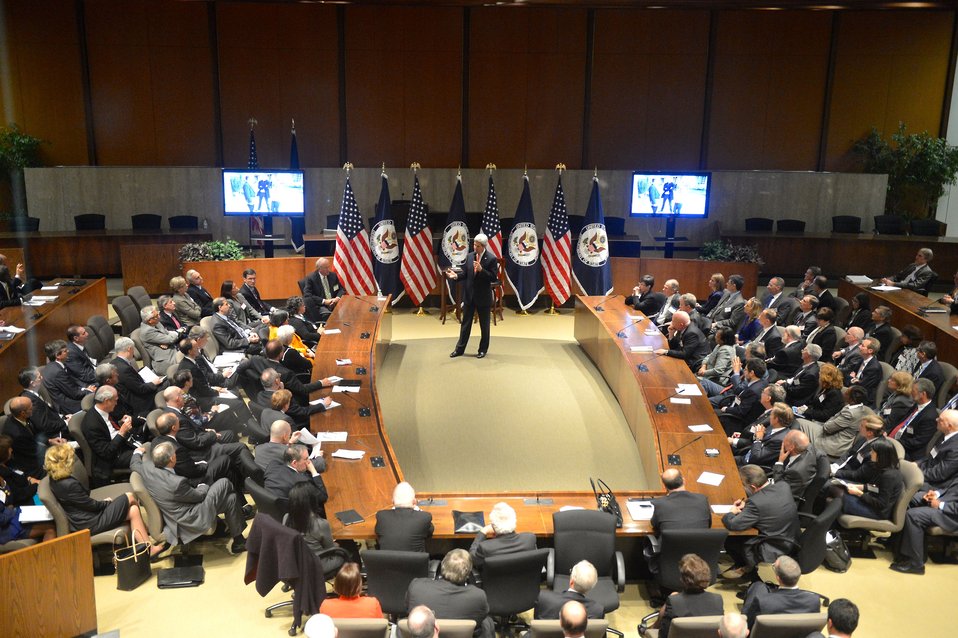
Secretary Kerry Holds a Conversation With America's Top Diplomats

U.S. Secretary of State John Kerry holds a conversation with the nation's top diplomats during the Global Chiefs of Mission Conference at the U.S. Department of State in Washington, D.C., on March 11, 2014.